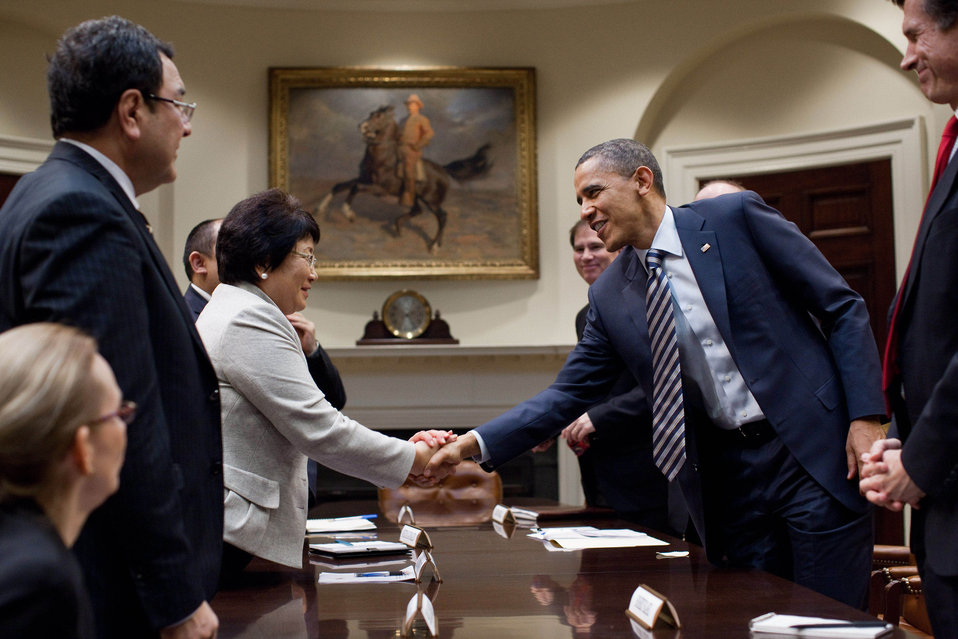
President Obama Shakes Hands With Kyrgyzstan President Otunbayeva

President Barack Obama shakes hands with President Roza Otunbayeva of Kyrgyzstan after stopping by the meeting with National Security Advisor Tom Donilon in the Roosevelt Room of the White House in Washington, D.C., on March 7, 2011.